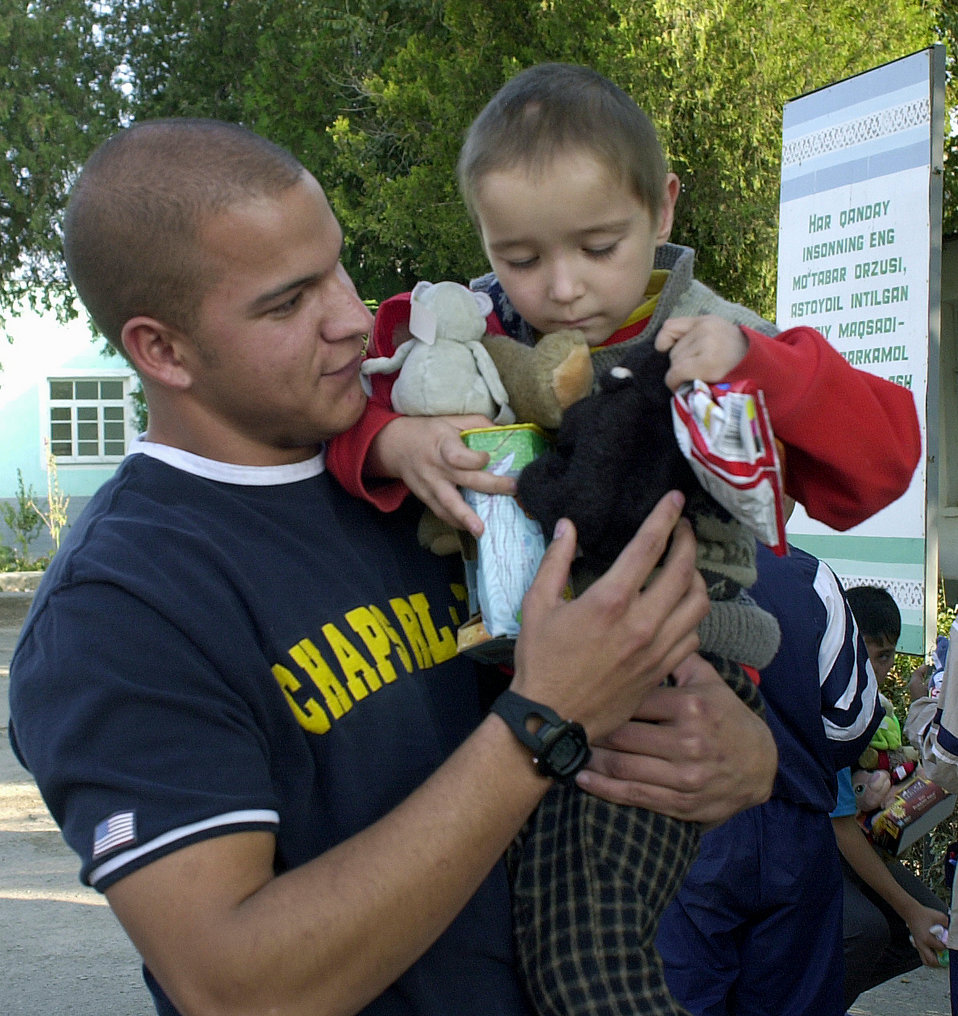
Lending a helping hand in Uzbekistan

KARSHI, Uzbekistan -- Airman 1st Class Nick Melahn plays with a 4-year-old orphan at a children's home here. The facility is a home for orphans and poor children whose families are unable to take care of them. He is assigned to the 416th Air Expeditionary Group at nearby Karshi-Khanabad.